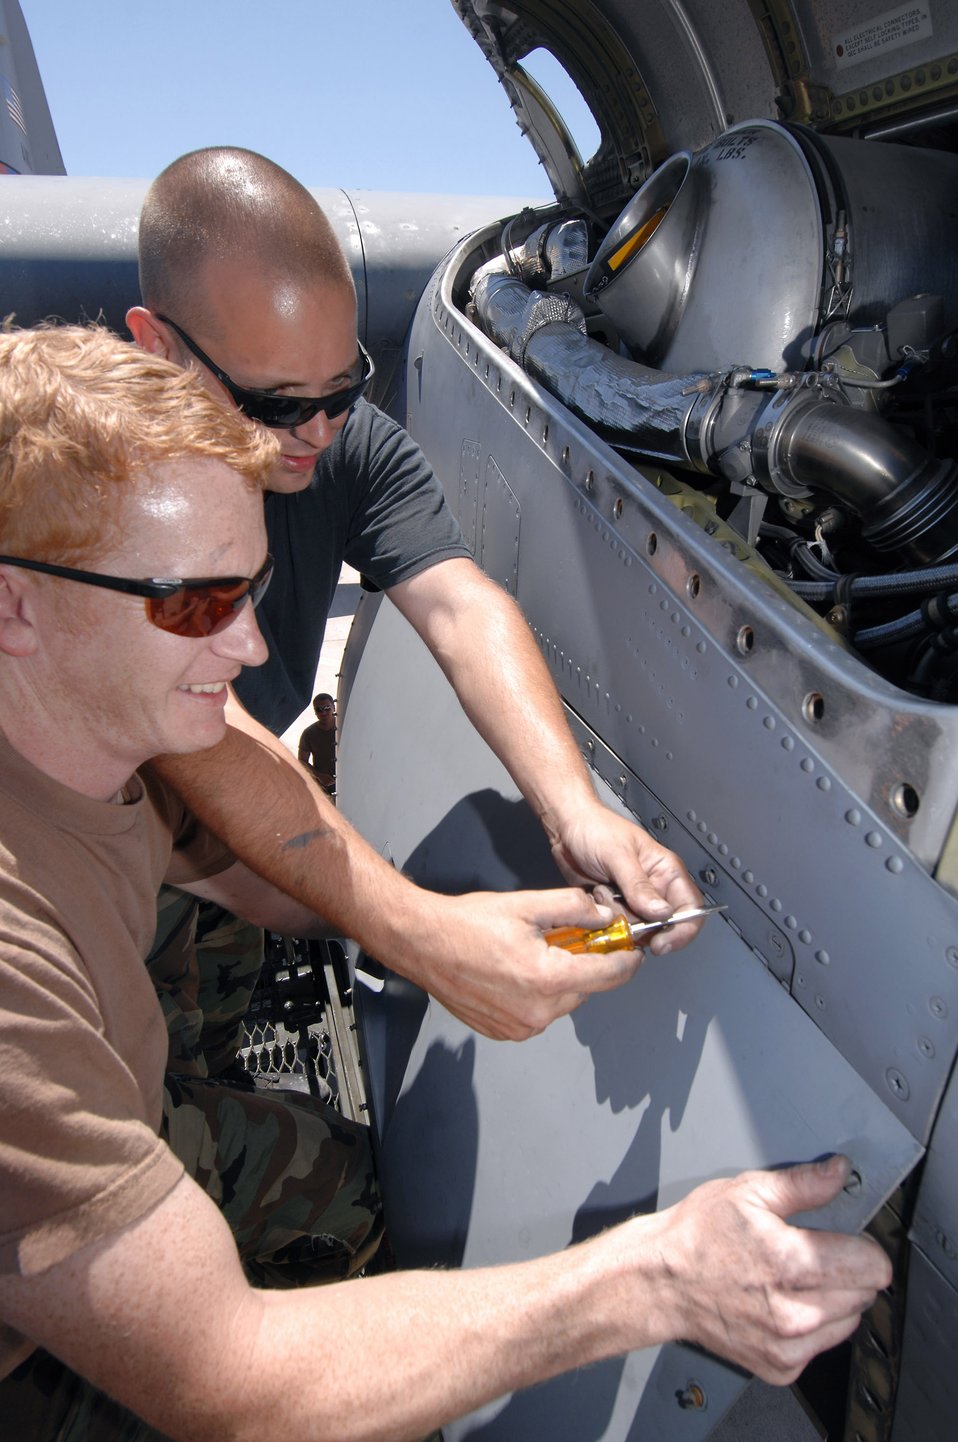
Maintainers keep C-130's flying during wildfire operations

Staff Sgt. Ralph Beauvais and Staff Sgt. Joe Burriss take the cowling off a C-130 Hercules engine July 4 to perform some maintenance on the aircraft before it flies out of McClellan Airfield, Calif., on its next airborne firefighting support mission. The two sergeants are assigned to the North Carolina Air National Guard's 145th Airlift Wing and are in California to assist with firefighting operations as part of the 302nd Air Expeditionary Group.